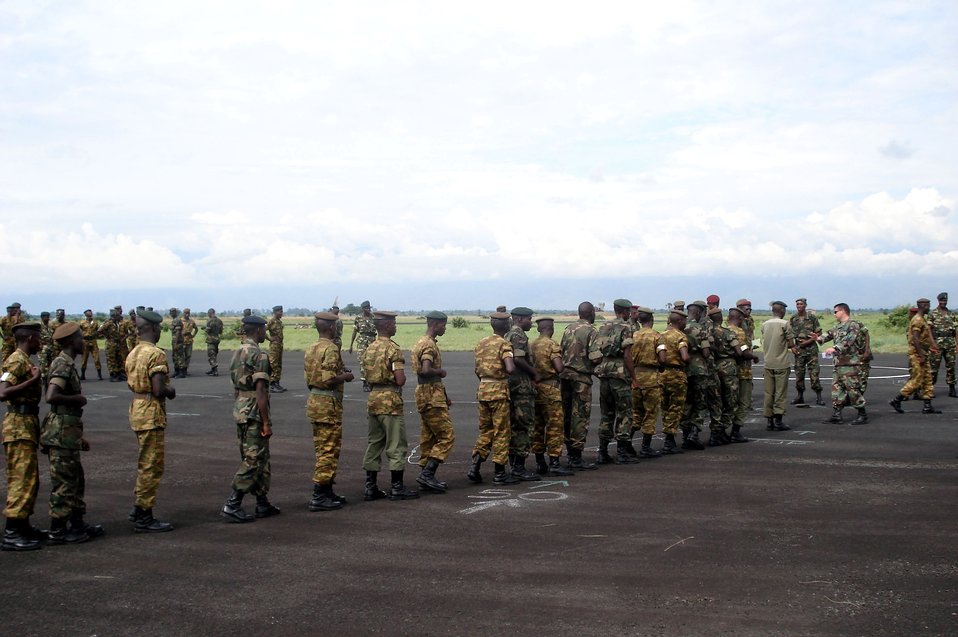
Ramstein Airmen help Burundi military deploy

Members from the 86th Contingency Response Group train Burundi troops in deployment planning, personnel and cargo preparation and processing Dec. 13 in Burundi. The 86th CRG Airmen are from Ramstein Air Base, Germany.